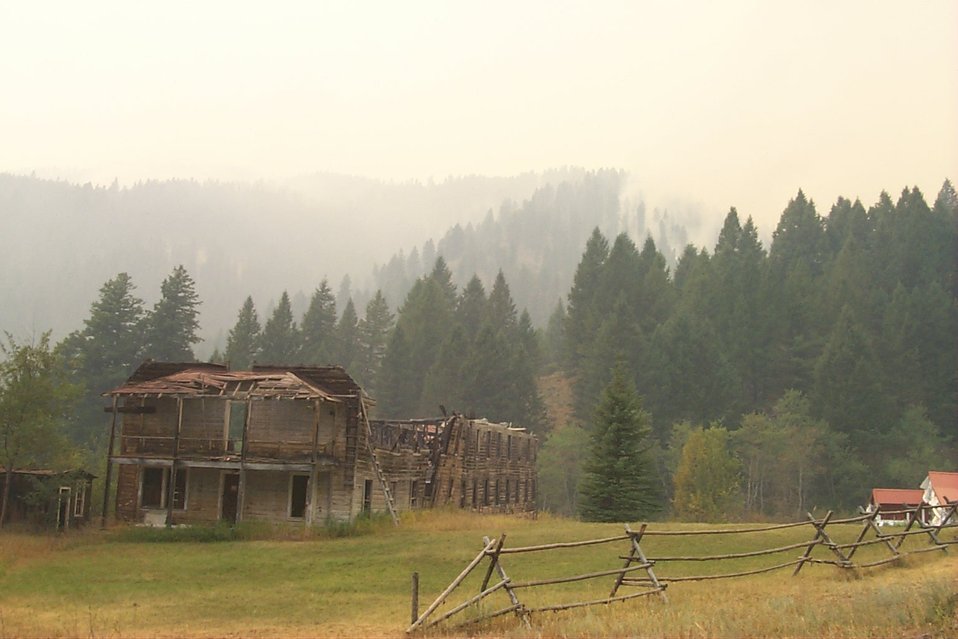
Urban interface Fire Clearwater Fire Salmon Field Office USRD Upper Snake River District